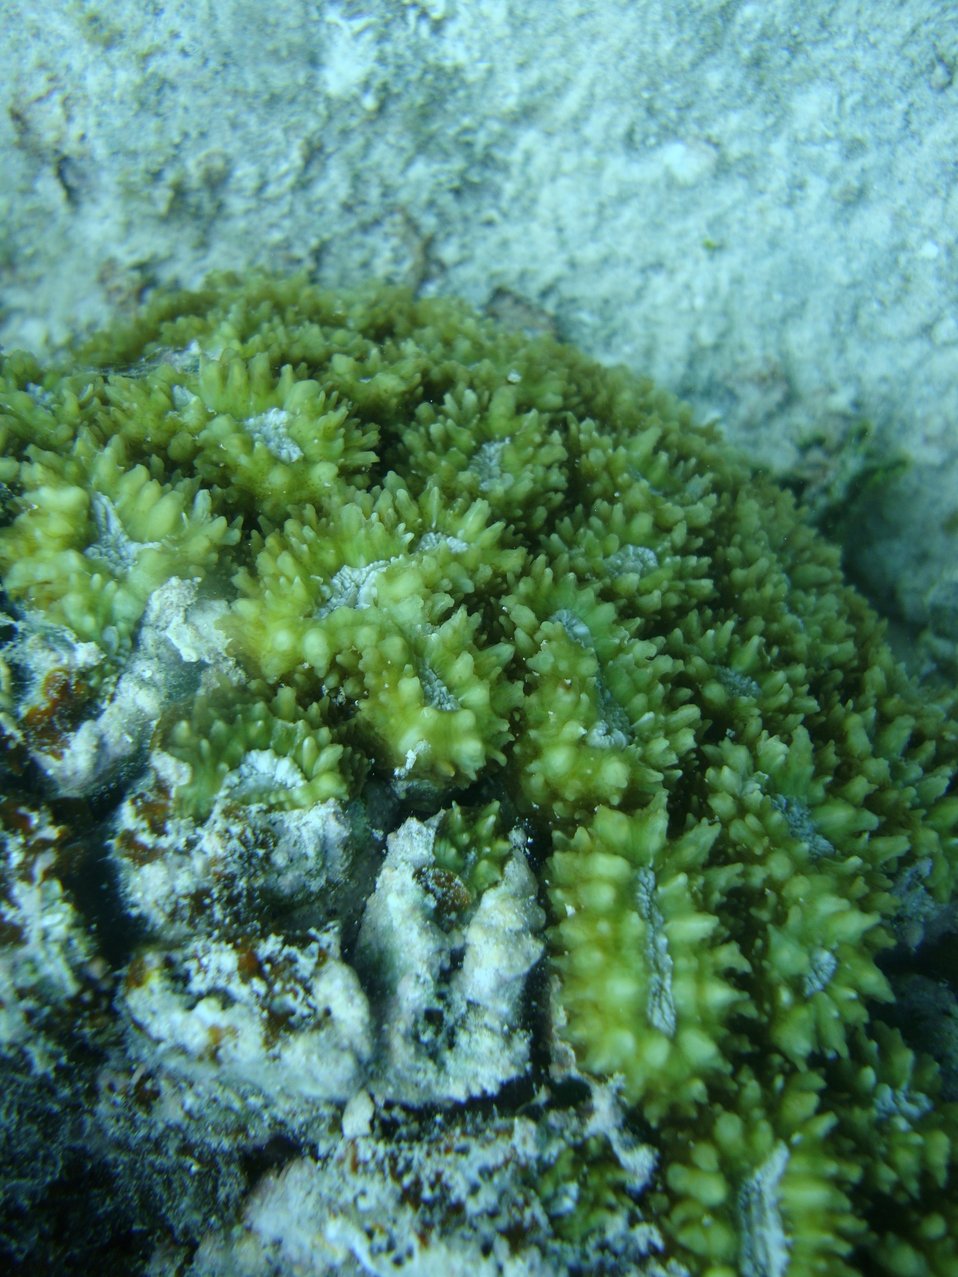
Faviidae coral